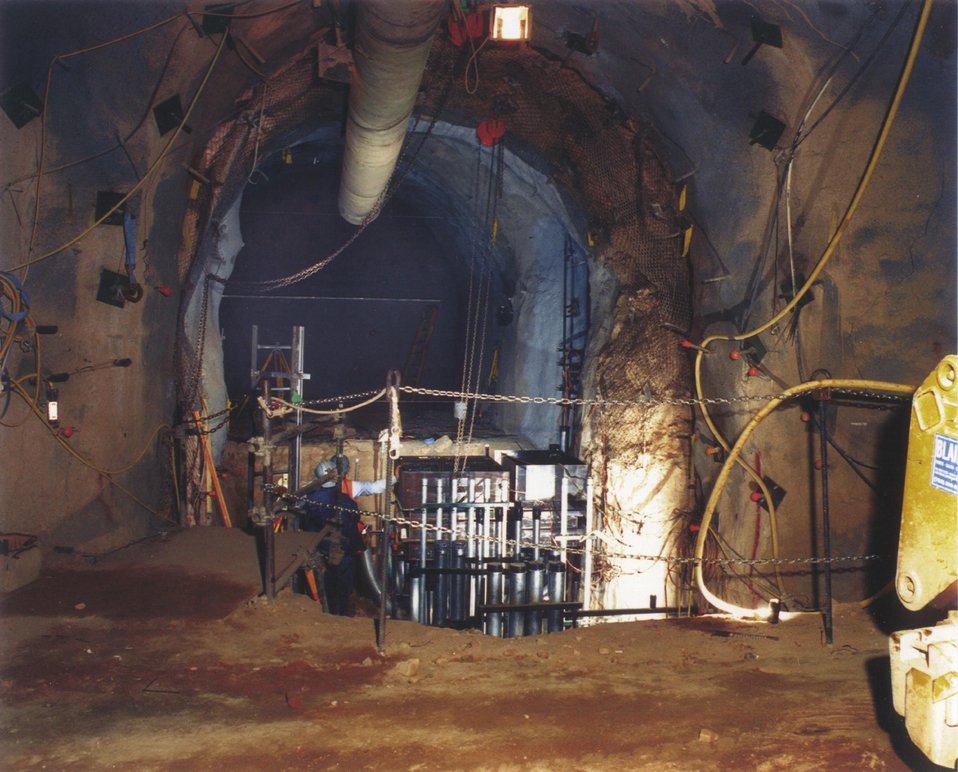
ONE OF TWO EXPERIMENTAL ALCOVES IN THE COMPLEX WHERE UTILITIES ARE BEING INSTALLED TO STAGE AND DIAGNOSE SUBCRITICAL TESTS.

EXPLOSIVE TESTS ARE CONDUCTED DEEP UNDER THE NEVADA DESERT BY LAWRENCE LIVERMORE NATIONAL LABORATORY PHYSICISTS AND ENGINEERS. THE SUBCRITICAL EXPERIMENTS ARE AIMED AT PROVIDING IMPORTANT DATA TO EXPERTS WATCHING OVER THE NATION'S NUCLEAR STOCKPILE.